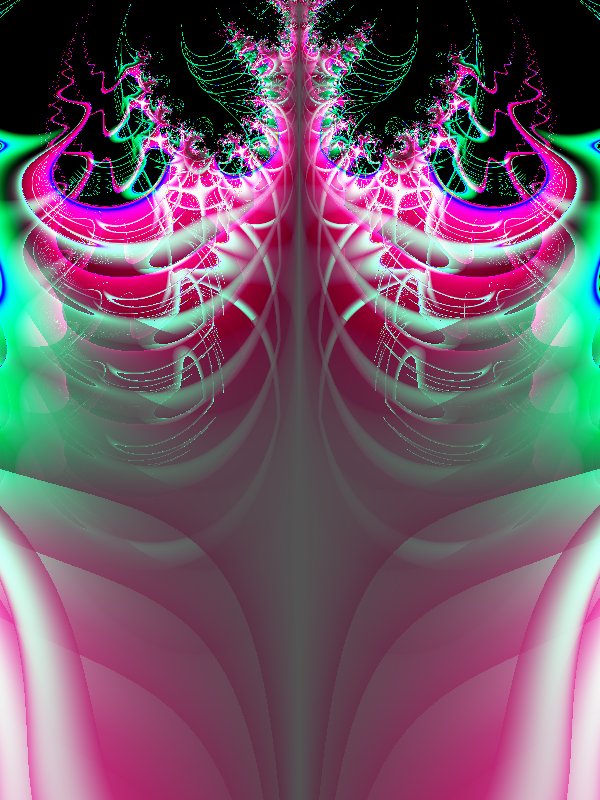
En fraktal generarad med programmet Vchira av Åke Persson. Ingen efterprocessing. sv:Kategori:Bilder av fraktaler